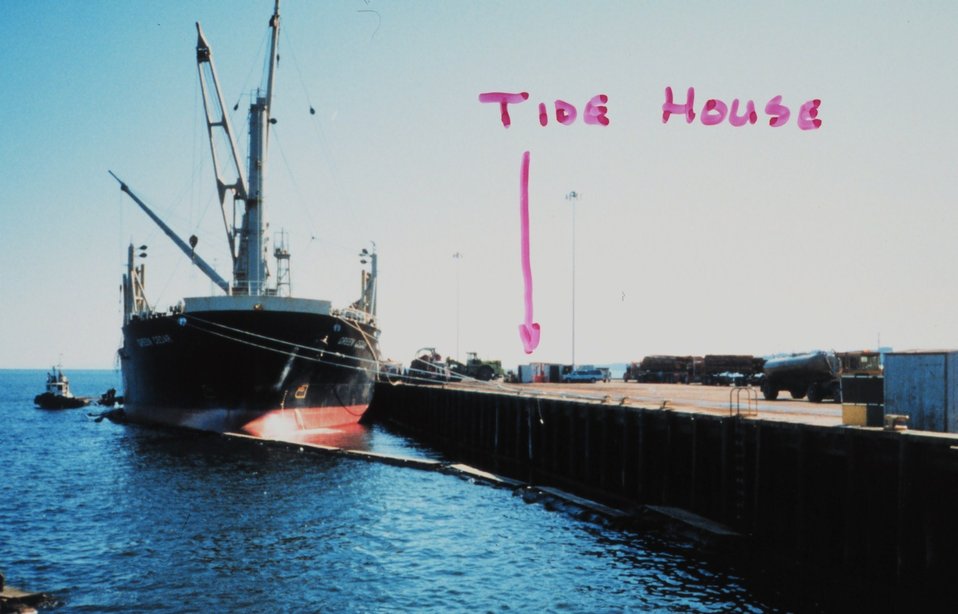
The tide house on the pier at Port Angeles